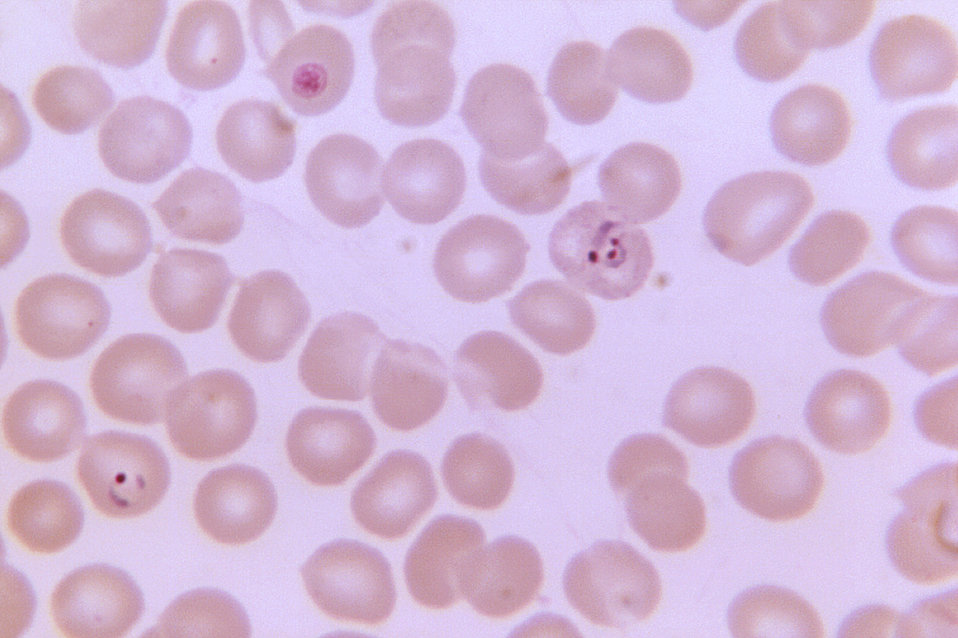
Magnified 1125X, this thin film photomicrograph of a blood smear, revealed the presence of a ring-form Plasmodium vivax trophozoite on the right, which contained three chromatin dots.